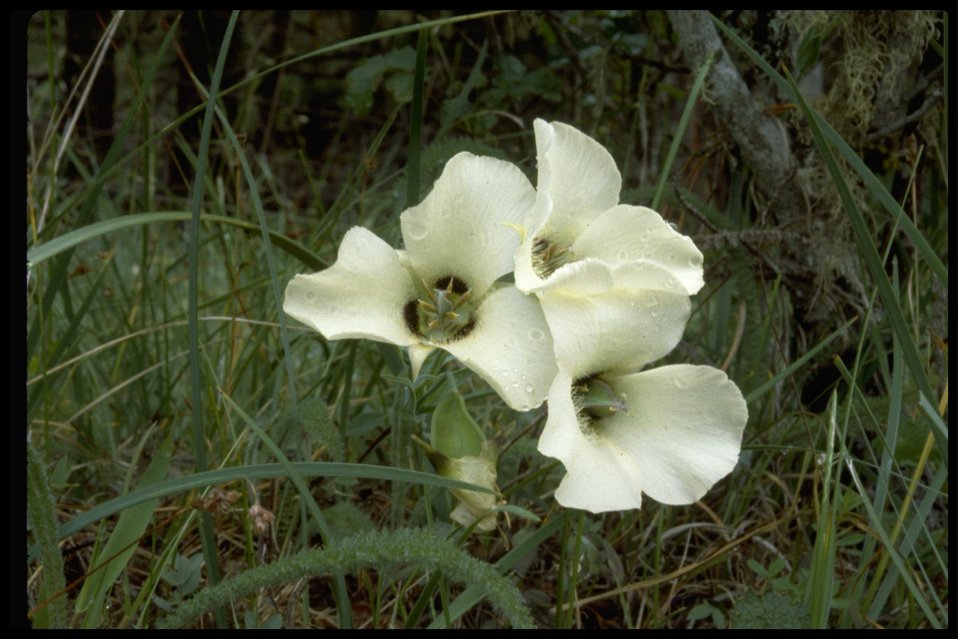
Calochortus umpquaensis, commonly known as Umpqua Mariposa Lily.